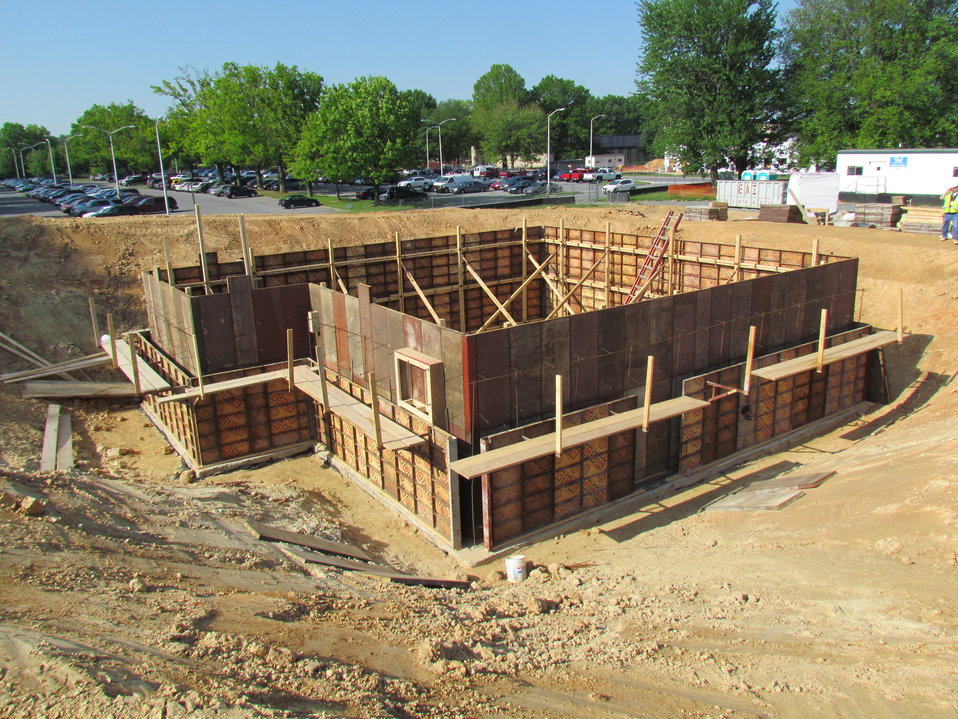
Net-Zero Energy Residential Test Facility - Construction photo showing completion of forms used for basement walls.